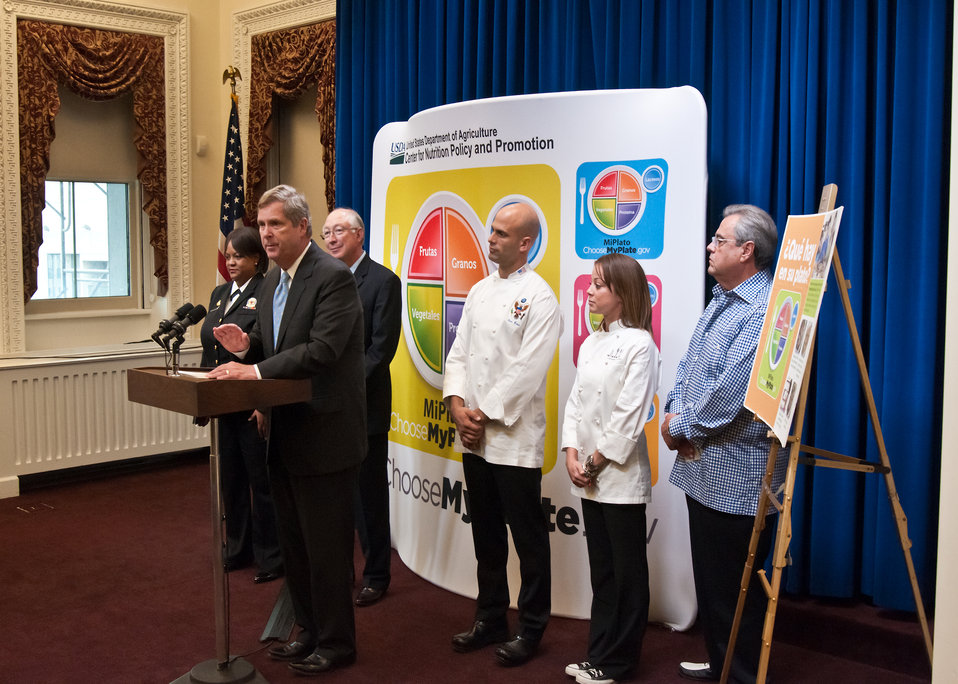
From left: Surgeon General Regina Benjamin, Interior Secretary Ken Salazar, Agriculture Secretary Tom Vilsack, White House Chef Sam Kass, Chef Marcella Valladolid and Chef Pepín highlighted the federal government's new food icon, MiPlato that will help serve as a reminder to help Hispanic consumers make healthier food choices as Part of the Hispanic Heritage Month Celebration. The event was held in the Eisenhower Executive Office Building in Washington, DC, Friday, September 30, 2011. Earlier this year, USDA unveiled MyPlate as a new generation icon with the intent to prompt consumers to think about building a healthy plate at meal times and to seek more information to help them do that by going to www.ChooseMyPlate.gov. The new MiPlato and MyPlate icons emphasize the fruit, vegetable, grains, protein and dairy food groups. The announcement is part of the Obama Administration’s celebration of Hispanic Heritage Month, which this year carries the theme “Renewing the American Dream,” and this week focuses on the community’s well being. The tips are part of a multi-year effort to raise awareness and educate consumers of every age on the importance of healthier eating and physical activity.